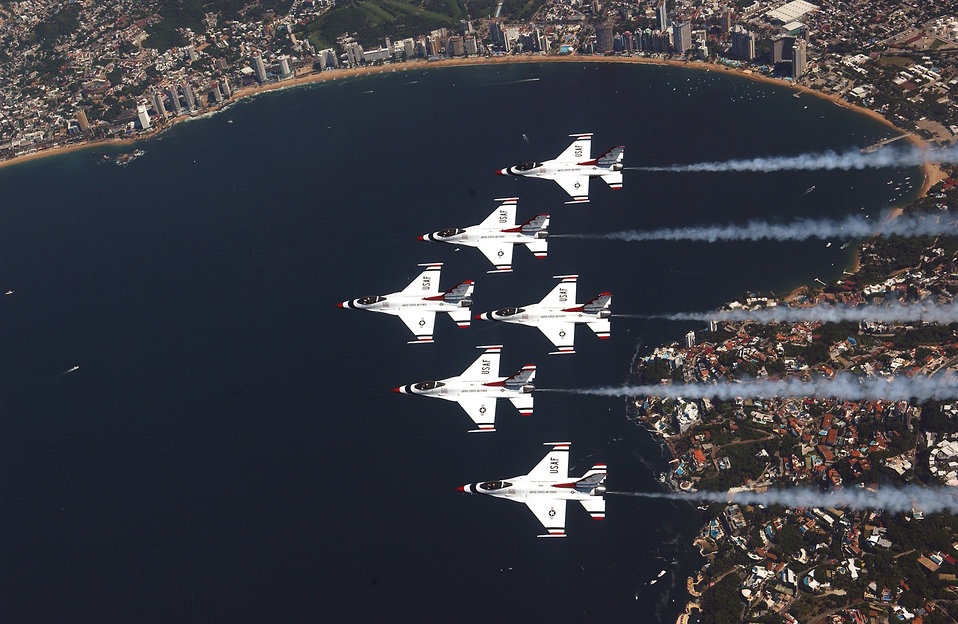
Delta

ACAPULCO, Mexico -- The U.S. Air Force Air Demonstration Squadron,